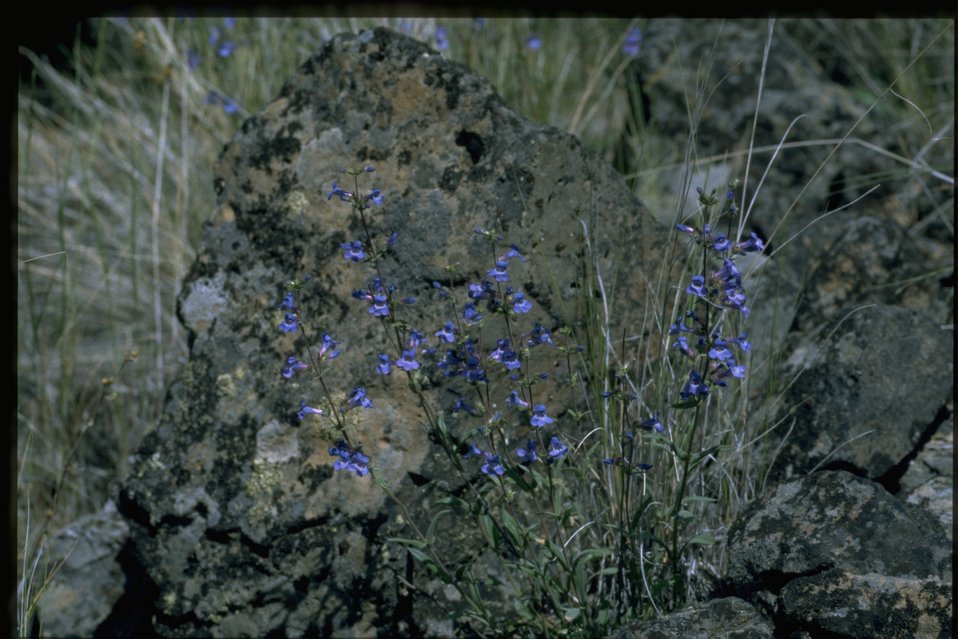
Farshot of low beartongue (Penstemon humilis).